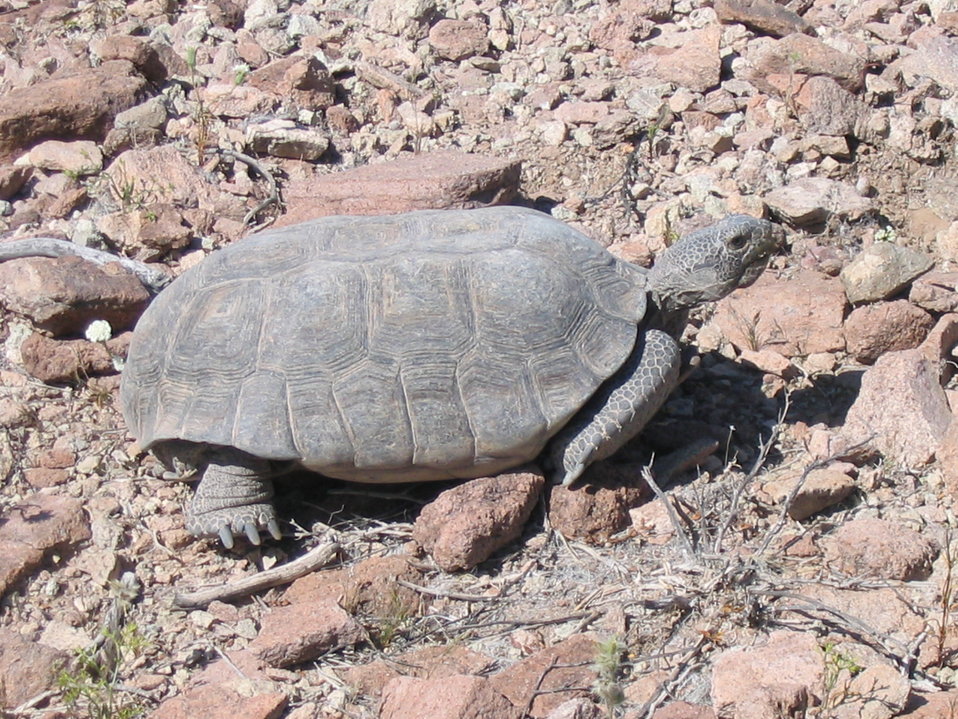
Mojave Desert Tortoise (Gopherus agassizii)

Desert tortoise (Gopherus agassizii) commonly known as the Mojave desert tortoise.